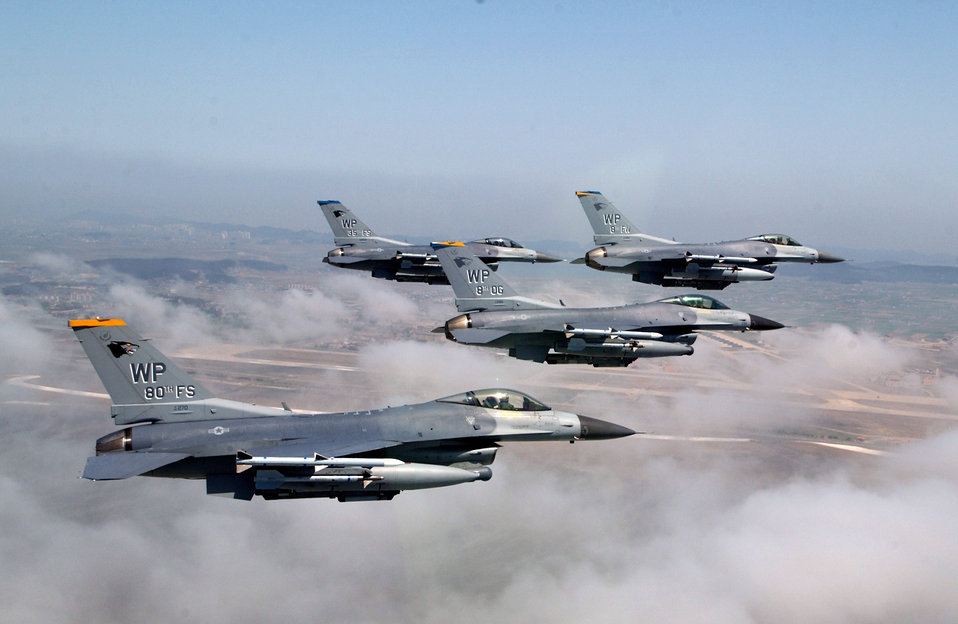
Falcons soar over South Korea

A formation of F-16 Fighting Falcons from the 8th Fighter Wing at Kunsan Air Base, South Korea, flies in close formation near the base on Friday, April 28, 2006. The formation was led by Col. Brian Bishop, 8th FW commander.